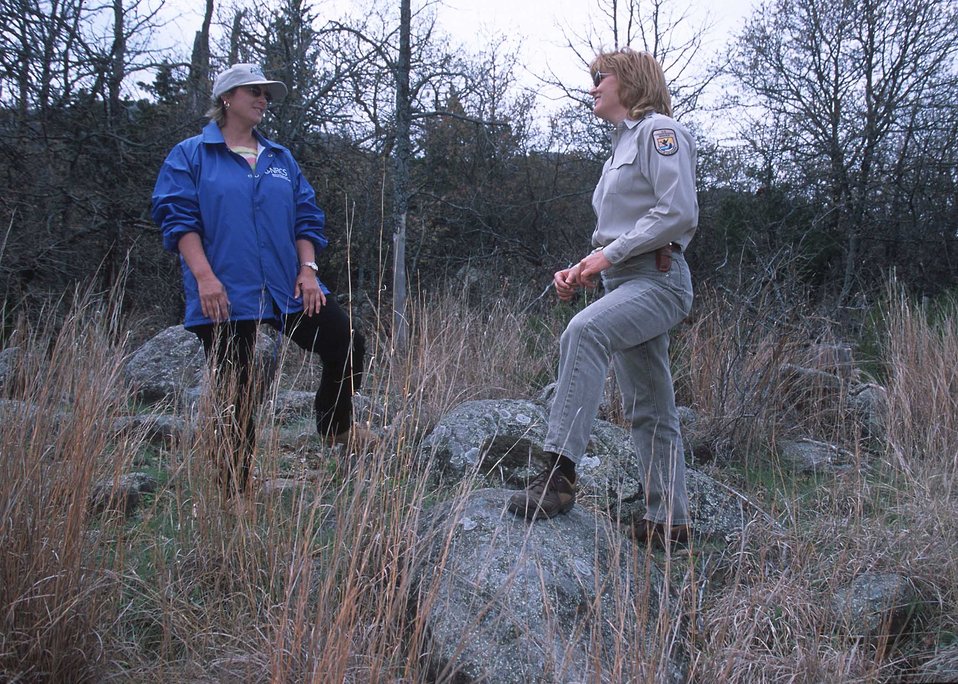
District Conservationist Mary Stoll and US Fish and Wildlife Service biologist observe the growth of bluestem after a prescribed burn one year earlier on the Witchita National Wildlife Refuge. Oklahoma.